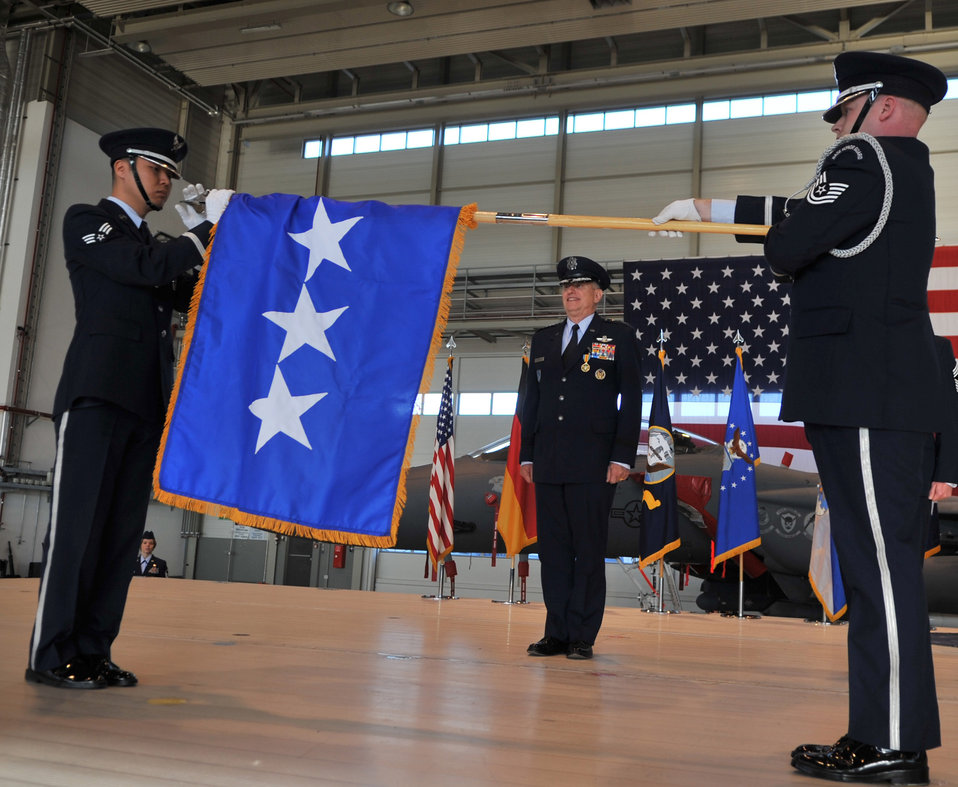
Gen. Mark A. Welsh III takes command of USAFE

U.S. Air Force Gen. Roger A. Brady watches his flag furl during his retirement ceremony after relinquishing command of U.S. Air Forces in Europe, Ramstein Air Base, Germany, Dec. 13, 2010. Gen. Brady, relinquished command of USAFE during the change of command ceremony after providing command and control for air, space and missile defense for activities in an area of operations covering almost one-fifth of the globe which included 51 countries in Europe, Asia, the Middle East, and the Arctic and Atlantic oceans.